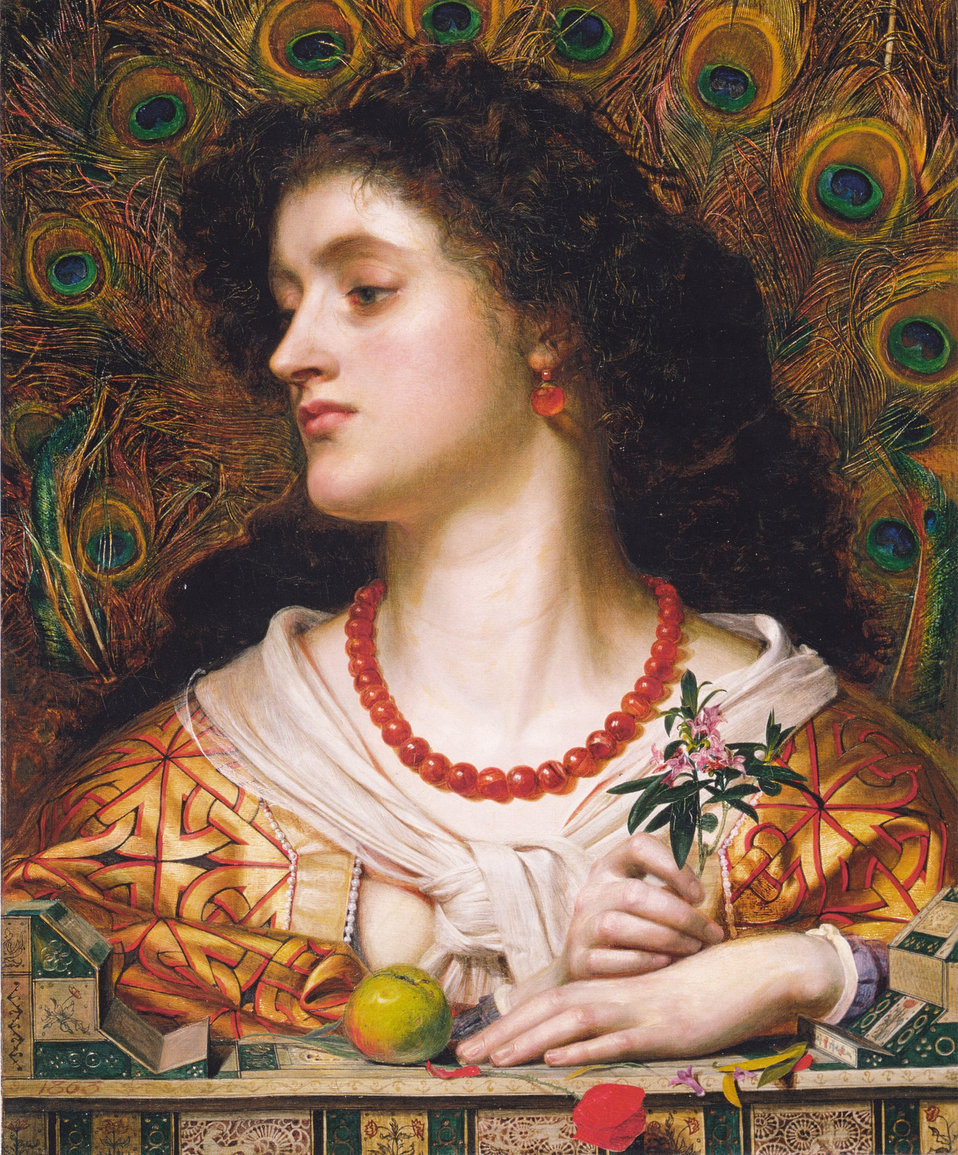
Anthony Frederick Augustus Sandys - Vivien - 1863